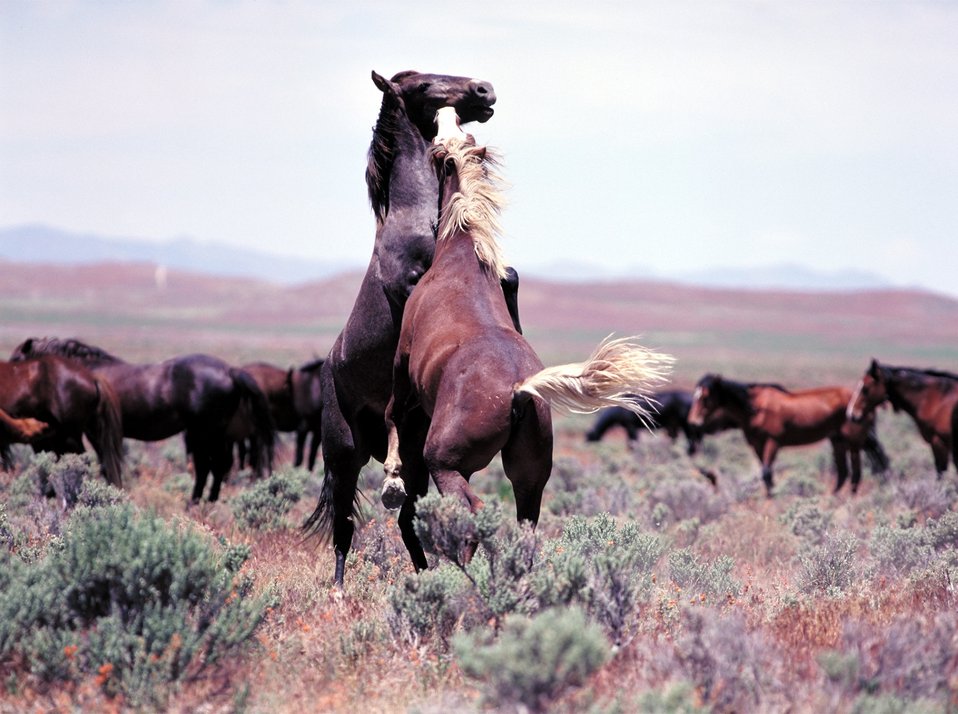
Onaqui Herd near Dugway, Utah.